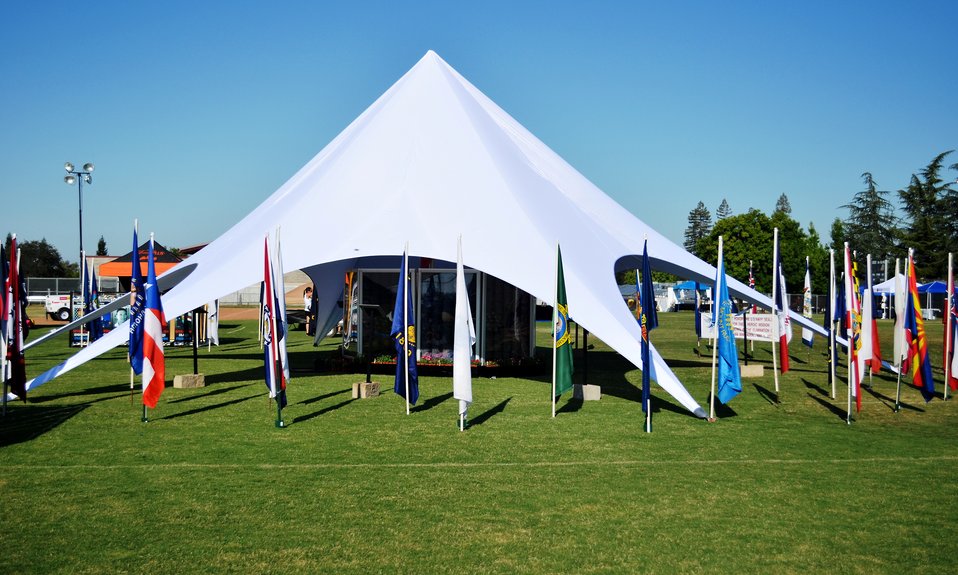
9/11 memorial honoring U.S. Armed Forces

A 9/11 memorial stood honoring the U.S. Armed Forces during a Battle at the Capital event Sep. 3, 2011. Battle at the Capital Inc. is a nonprofit public corporation providing vital programs and services to severely wounded service members and veterans, while raising awareness and enlisting the public’s aid through athletic competition.